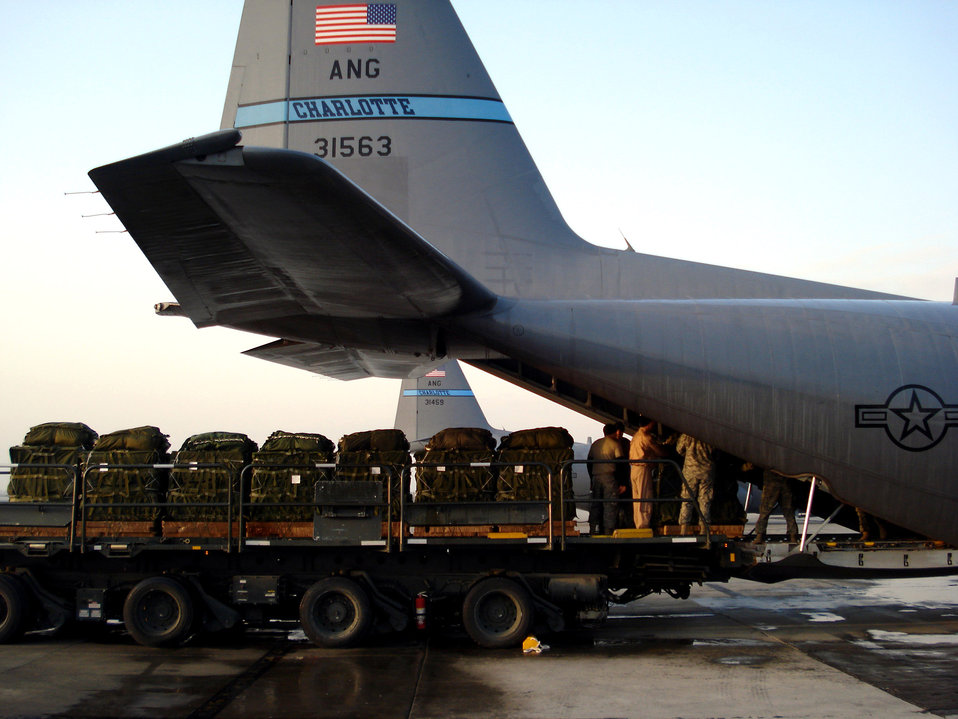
C-130 airdrops provide critical supplies to U.S. forces

Supplies are loaded onto a C-130 Hercules at Bagram Air Base, Afghanistan, March 27, that later will be airdropped to U.S. ground forces in support of Operation Enduring Freedom.